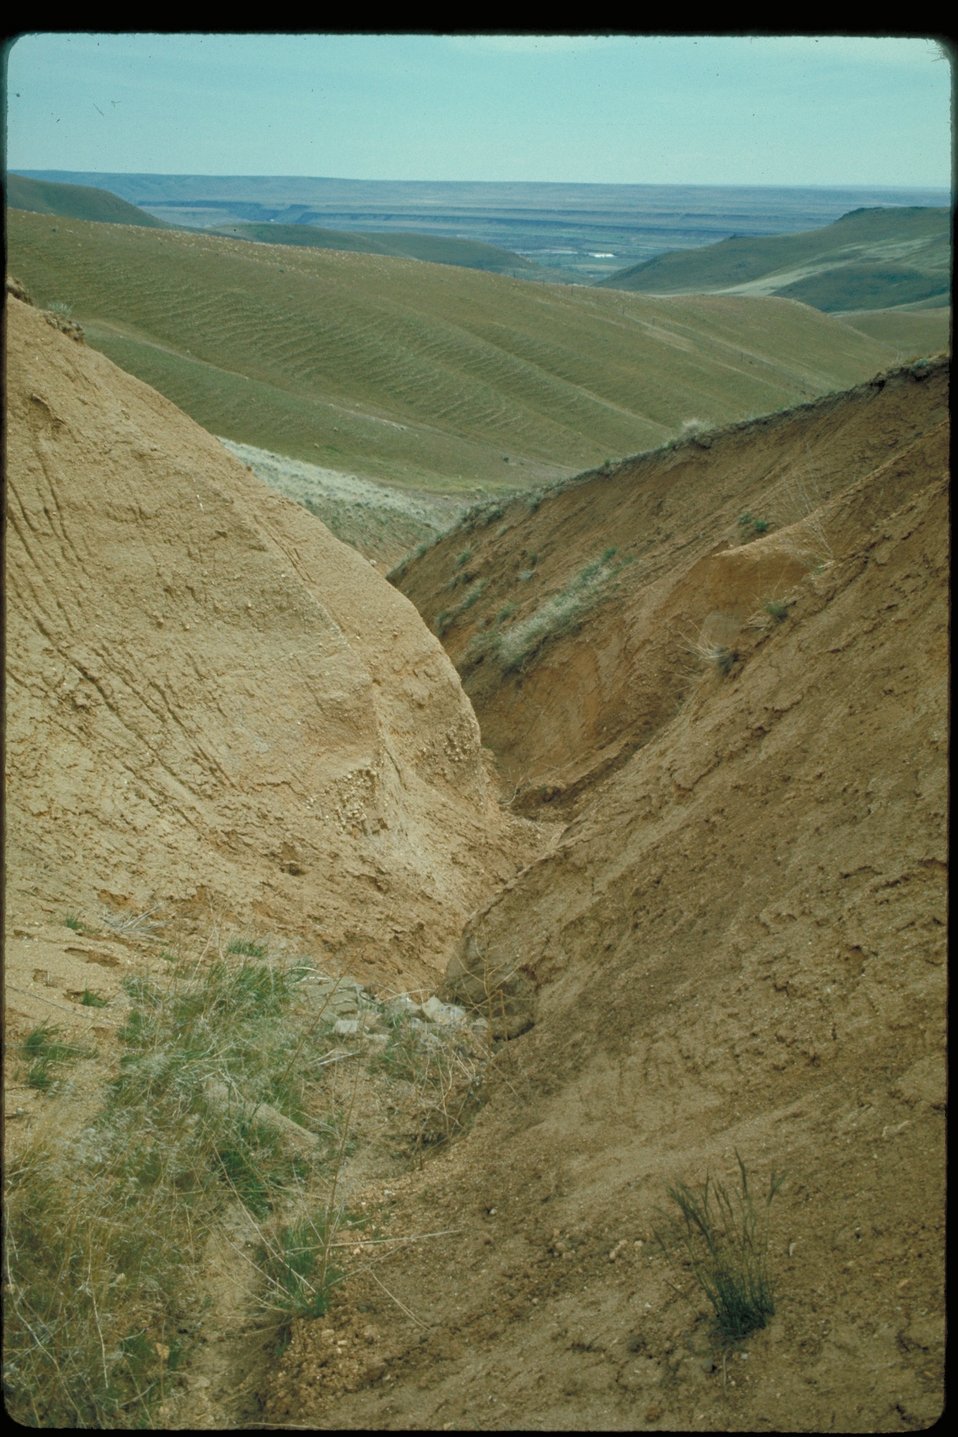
Erosion above Table Rock Boise Front Four Rivers Field Office LSRD Lower Snake River District